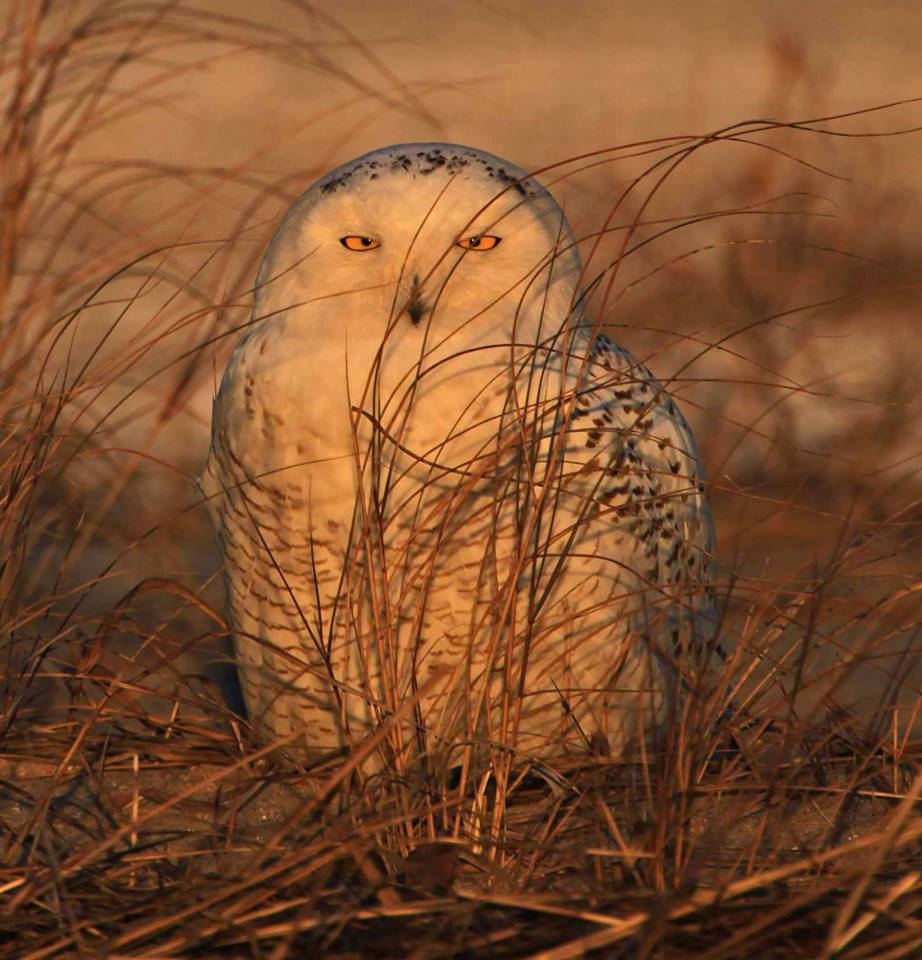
Chincoteague Refuge

Chincoteague National Wildlife Refuge, VA.